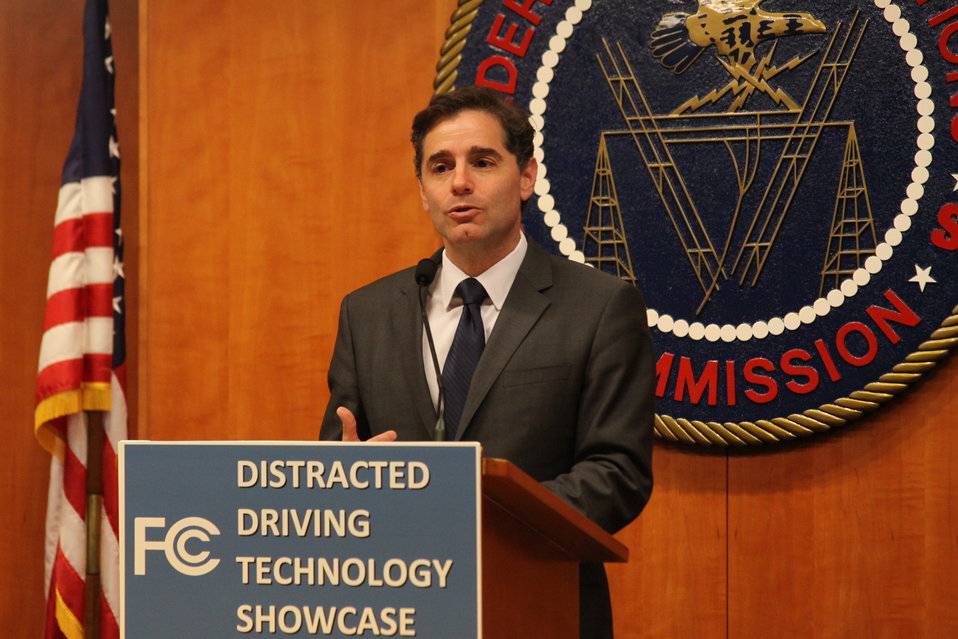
Chairman Julius Genachowski’s Remarks: Distracted Driving Technology Showcase April 19, 2013